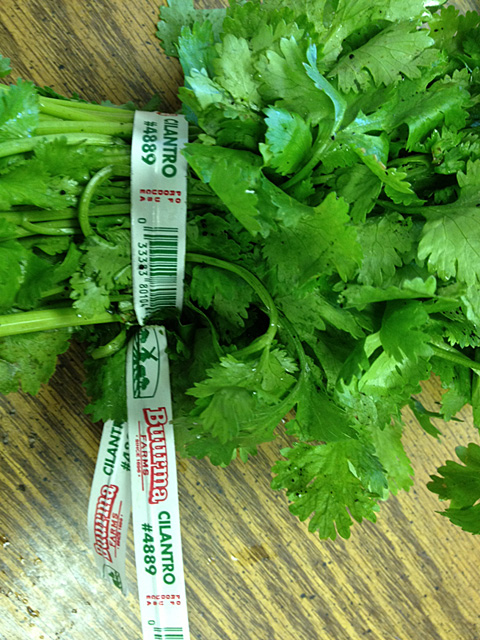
RECALLED - Cilantro

August 17, 2013 – Product Recall – Buurma Farms, Inc. Recalls Fresh Cilantro Due to Possible Health Risk.